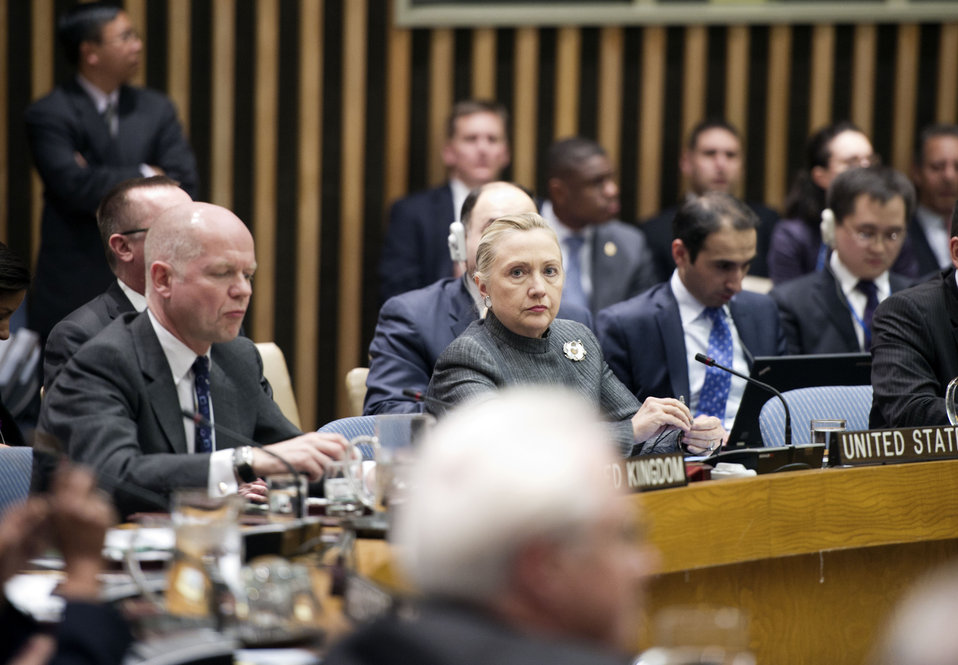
Secretary Clinton Delivers Remarks at UN Security Council Session on Syria

U.S. Secretary of State Hillary Rodham Clinton delivers remarks at a United Nations Security Council Session on the situation in Syria at the United Nations in New York City, New York on January 31, 2012.